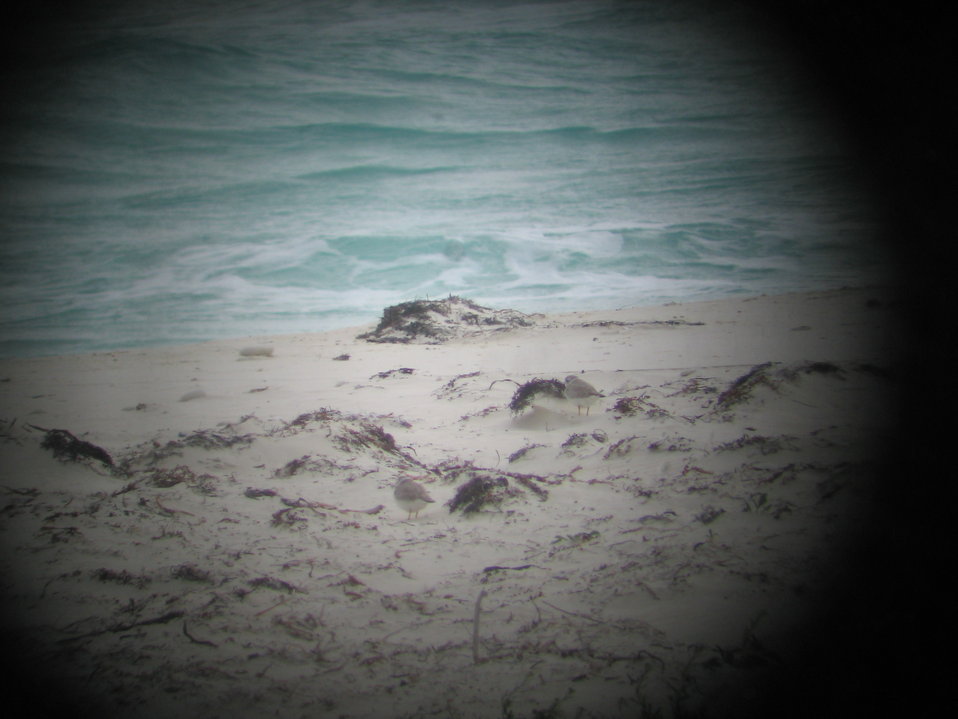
Piping plovers through spotting scope (“digiscoped”)

Photo taken at Berry Islands.